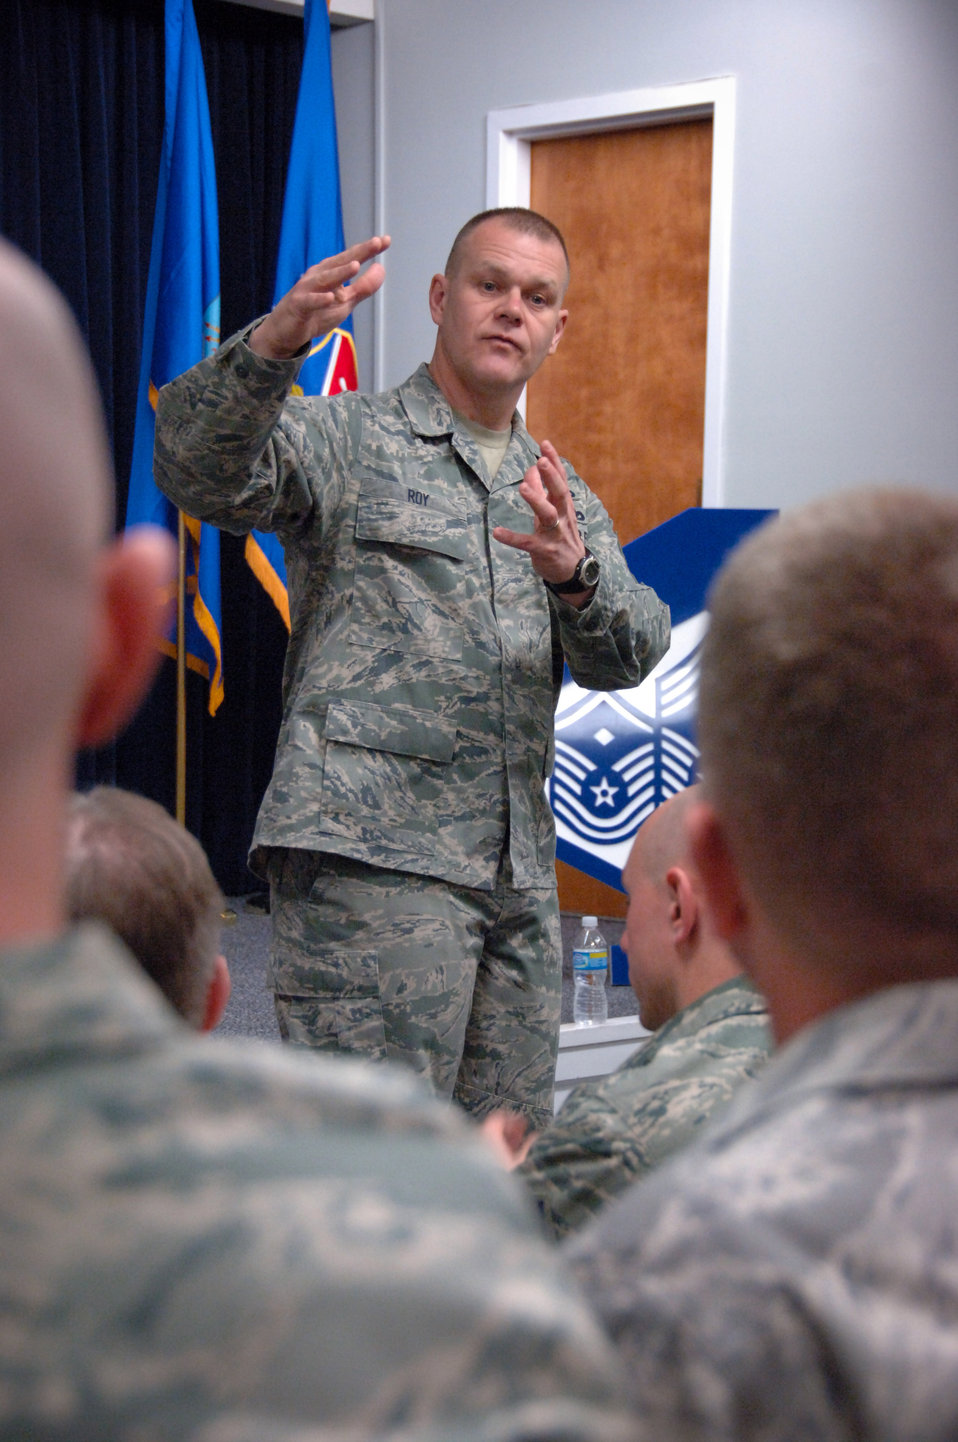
CMSAF Roy at First Sergeant Academy

Chief Master Sergeant of the Air Force James Roy speaks to students at the First Sergeant Academy at Maxwell-Gunter Air Force Base, Ala., on Feb. 23, 2010.